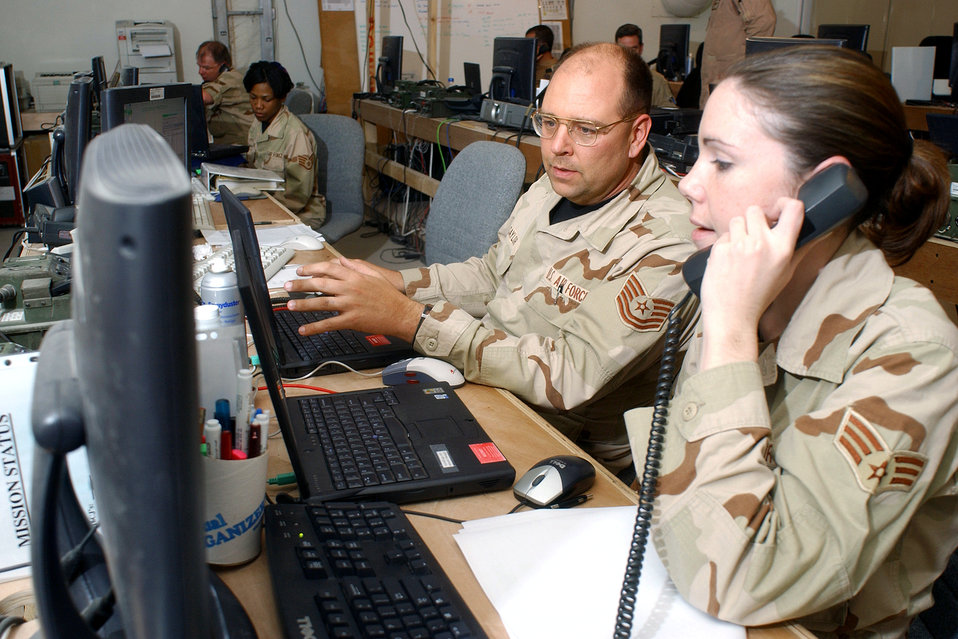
Sortie filing

OPERATION IRAQI FREEDOM -- Tech. Sgt. Raymond Saylor and Senior Airman Kristina Degracia, Coalition Operations Center members, update sortie mission and flight filing. Both are assigned to the 379 Air Expeditionary Wing at a deployed location.